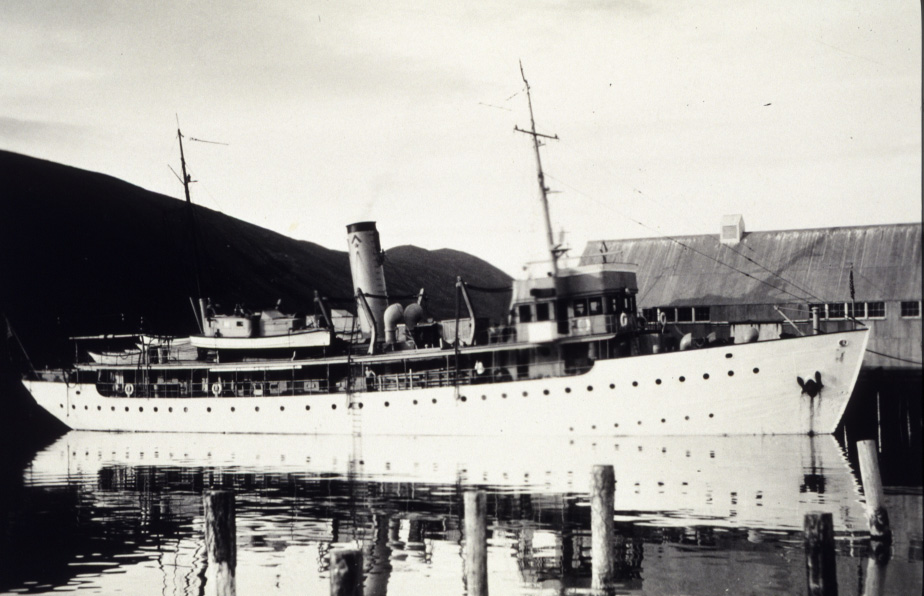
Coast and Geodetic Survey Ship SURVEYOR. In service 1917 - 1956. Pacific service